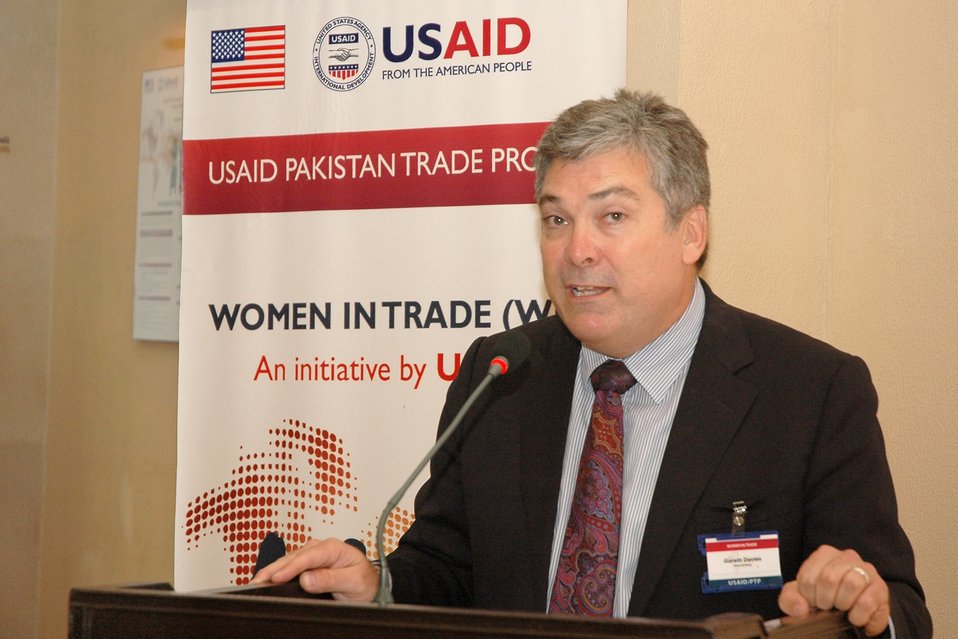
Launch of USAID's Women in Trade Initiative

The international trade sector in Pakistan currently employs very few women in managerial positions. A recent USAID-funded study has shown women comprise less than 10 percent of management and 20 percent of junior staff in trade companies. The Women in Trade initiative will work to set up linkages between international firms and local universities, so that more women have opportunities to explore careers in international trade. The USAID-funded initiative will also help companies select the best-suited male and female university graduates for training and potential future recruitment.